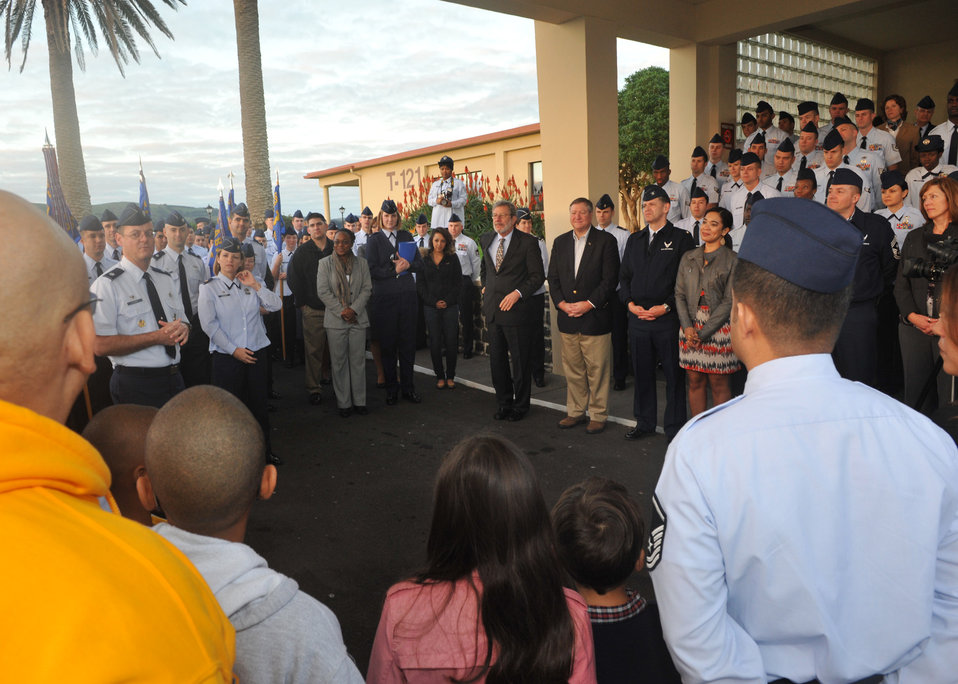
Secretary of the Air Force visits Lajes

Secretary of the Air Force Michael Donley attends a Warrior Welcome and Departure ceremony in support of Team Lajes Airmen at Lajes Field, Azores, Dec. 19, 2011. The Secretary toured several units of the 65th Air Base Wing and spoke with Airmen in all functions and dimensions of the mission at Lajes Field.